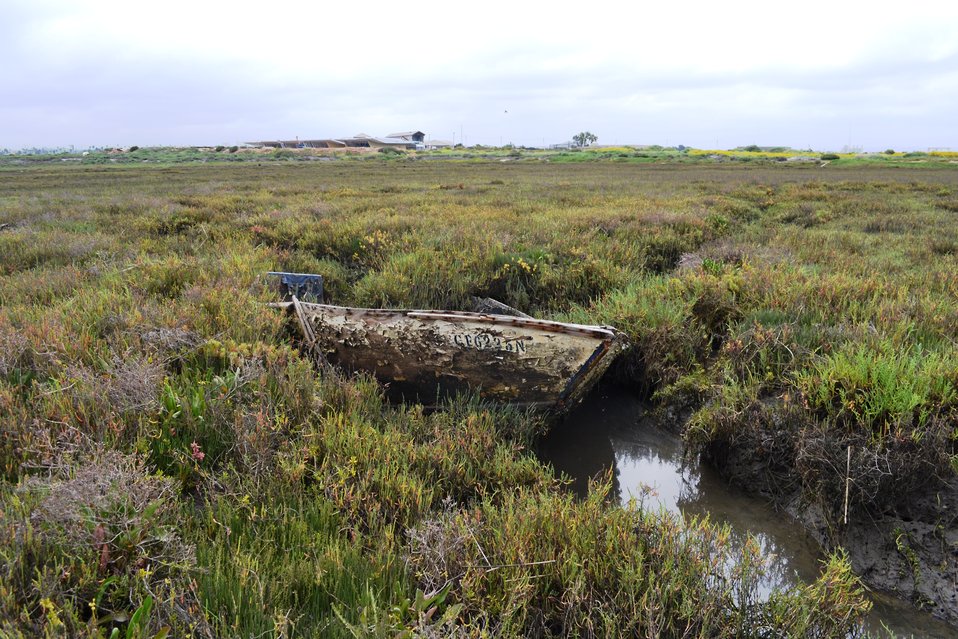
Stranded boat on Sweetwater Marsh

No one knows where this boat came from or when it arrived, but the salt marsh plants sure don't seem to mind it being there!